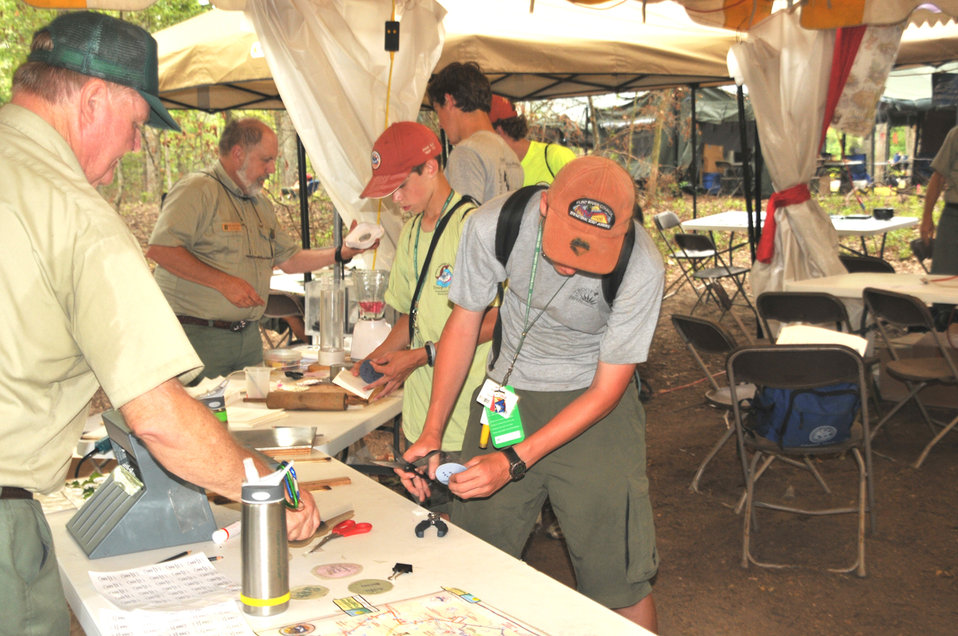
jamboree2

Forest Service staffers in the Conservation area help Scouts complete their work on merit badges during the 2010 Centennial Boy Scout Jamboree.